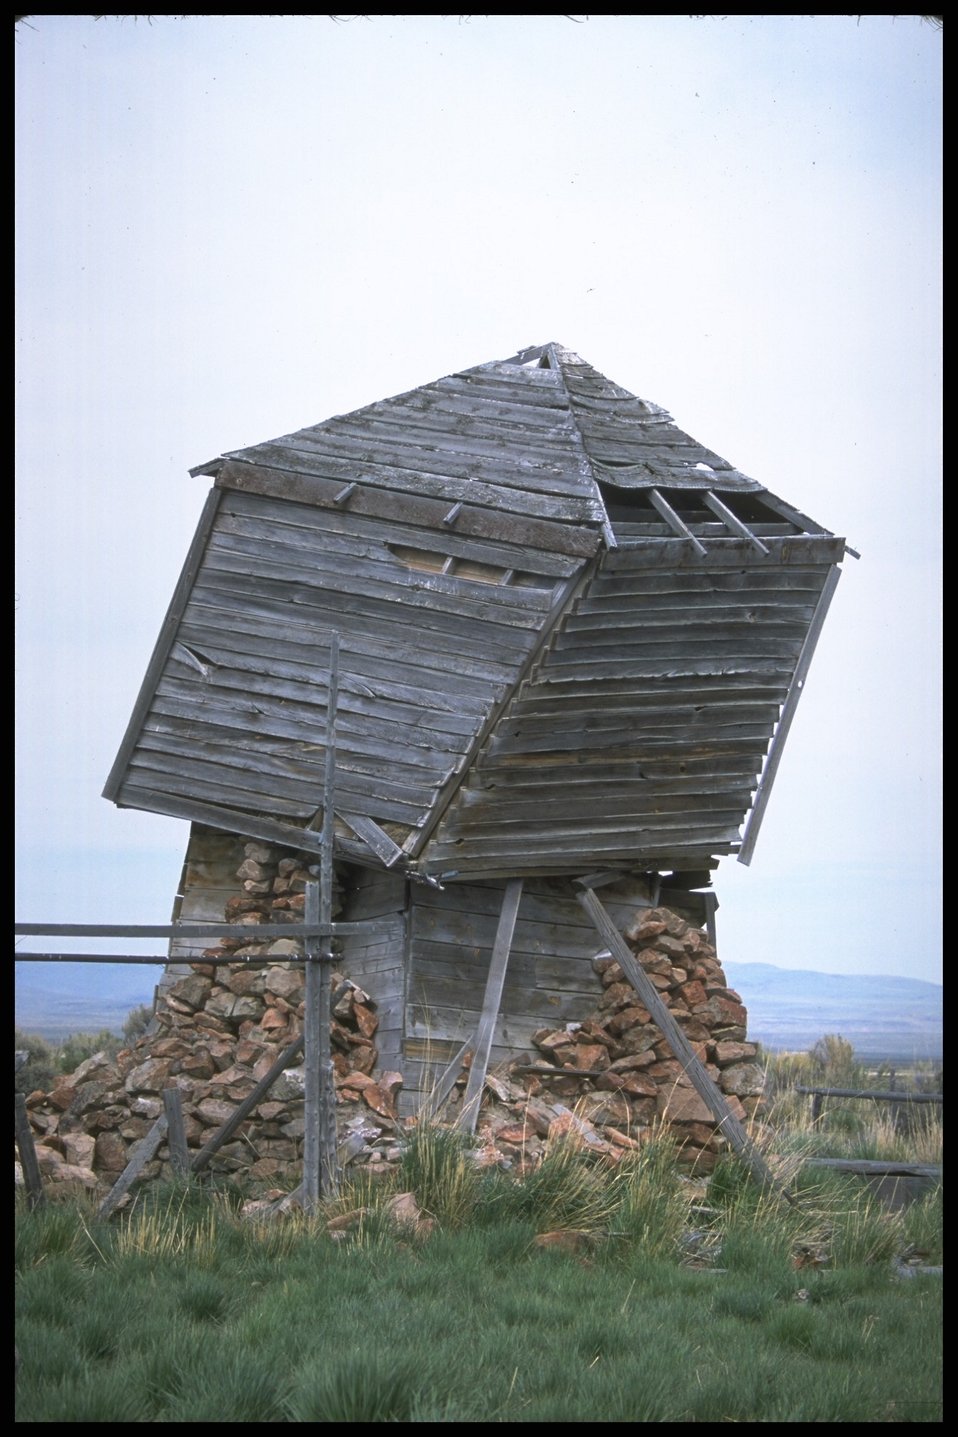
Old wooden water tower at Shirk Ranch, Lakeview District.